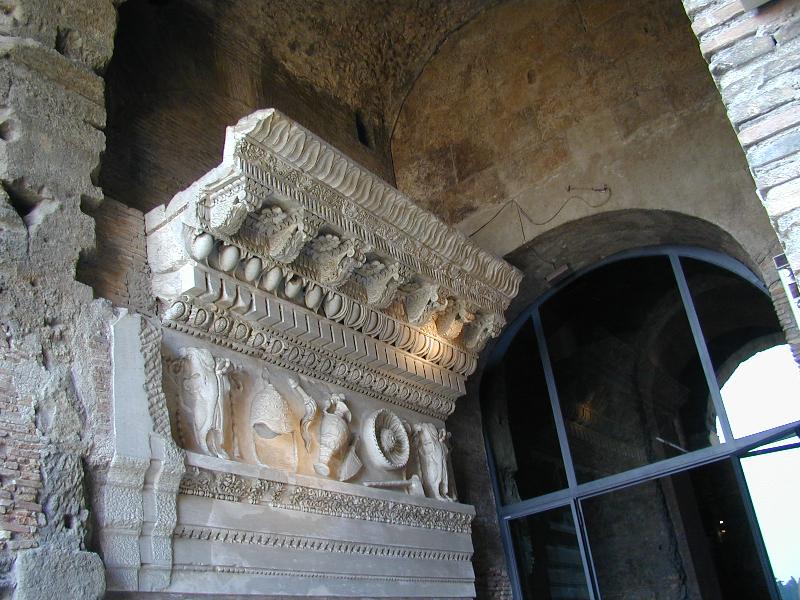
010218 campidoglio Tabularium 03